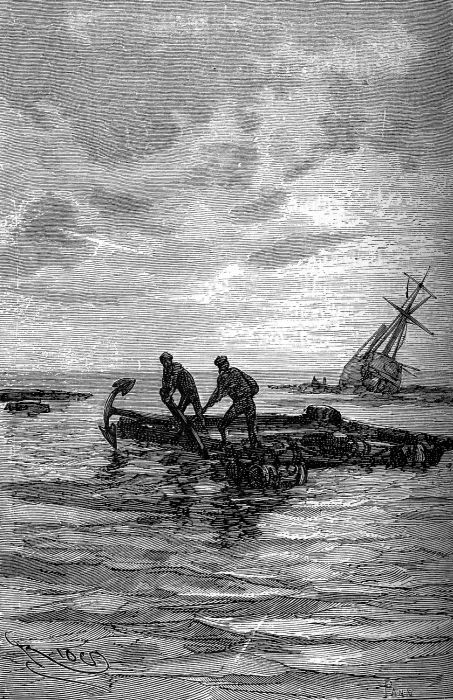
An ilustration from the novel 'In Search of the Castaways; or Captain Grant's Children' by Jules Verne drawn by Édouard Riou. Polski: Ilustracja powieści Juliusza Verne'a 'Dzieci kapitana Granta' autorstwa Édouarda Riou. Français : 'Les Enfants du capitaine Grant', Édouard Riou. Français : Ils mouillèrent à une demi-encablure.